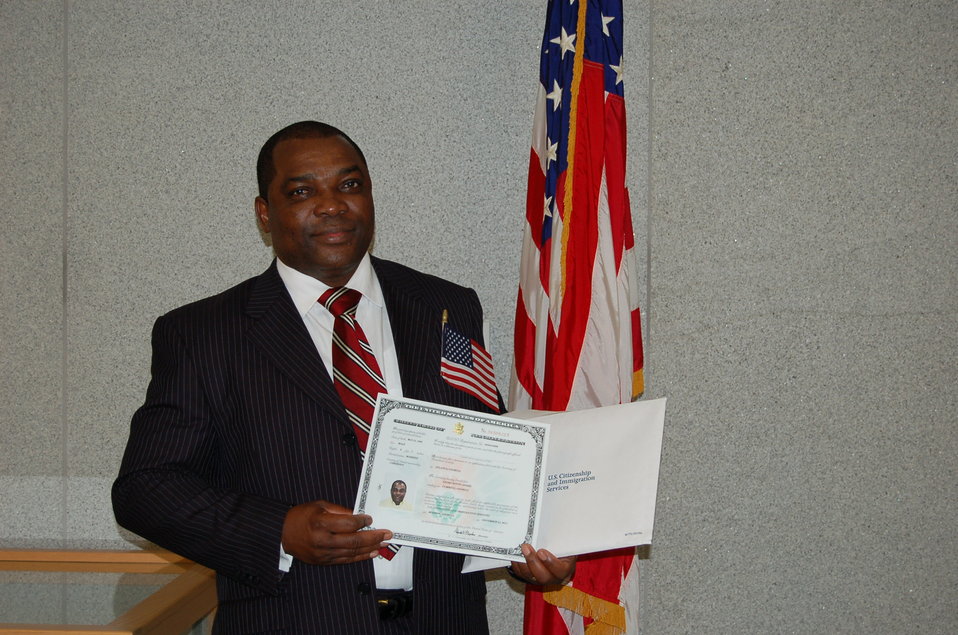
New Citizens